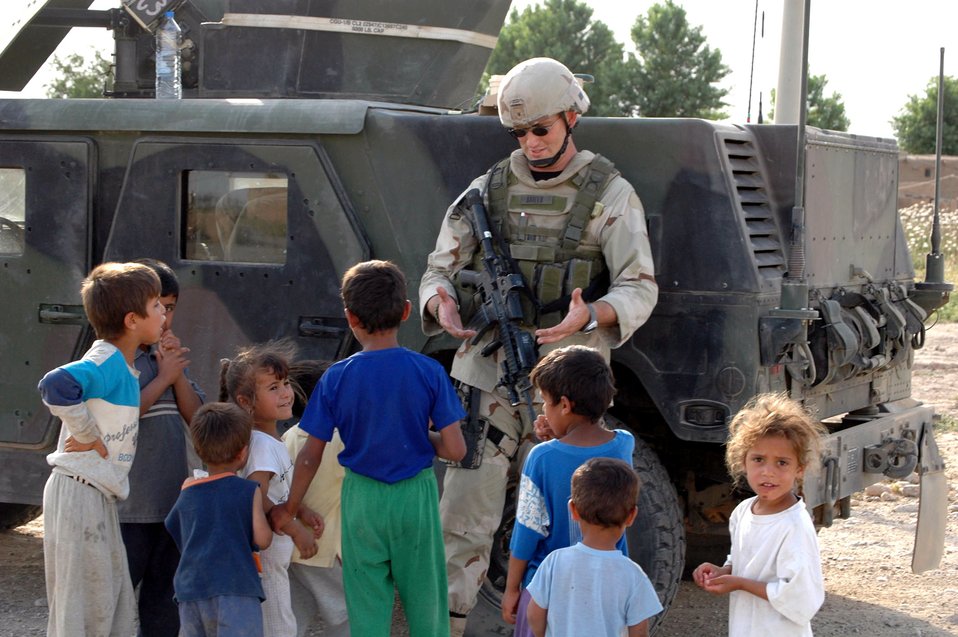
Security forces begin transfer of mission to Iraqis

Airman Andrew Smith gets to know the local children in the village of Dibik Tappah during a patrol near Kirkuk Air Base, Iraq, on Monday, May 22, 2006. Airman Smith is with the 506th Expeditionary Security Forces Squadron and is deployed from Moody Air Force Base, Ga.